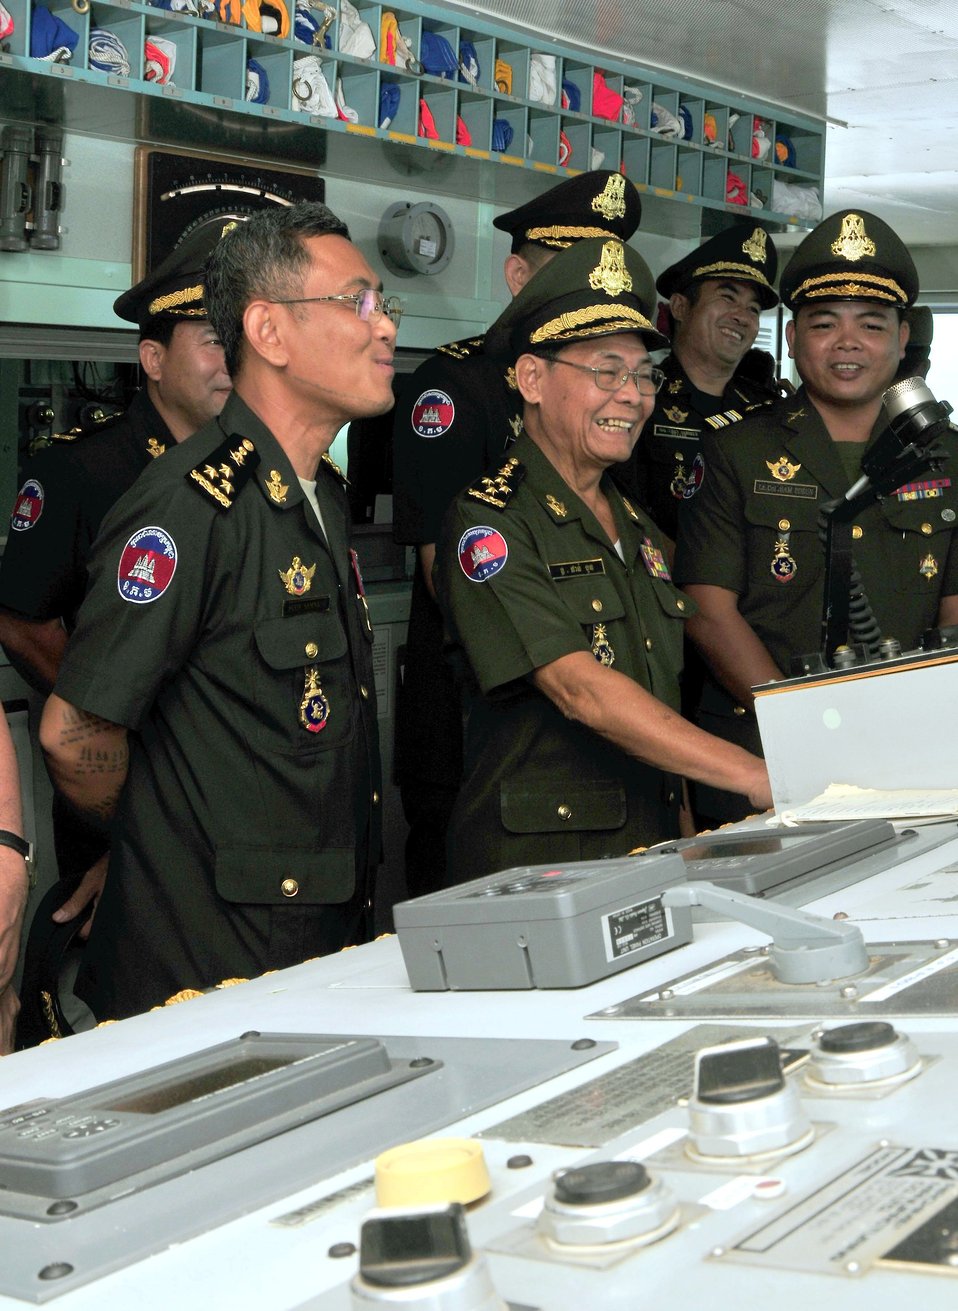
Secretary of State, Ministry of National Defense for Cambodia, H.E. Gen. Phan Nguon Tours Bridge of the Military Sealift Command Hospital Ship

The Secretary of State, Ministry of National Defense for Cambodia, H.E. Gen. Phan Nguon, tours the bridge of the Military Sealift Command hospital ship USNS Mercy (T-AH 19) on June 26, 2010, in Sihanoukville, Cambodia. Mercy is in Cambodia conducting Pacific Partnership 2010, the fifth in a series of annual U.S. Pacific Fleet humanitarian and civic assistance endeavors designed to strengthen regional partnerships.